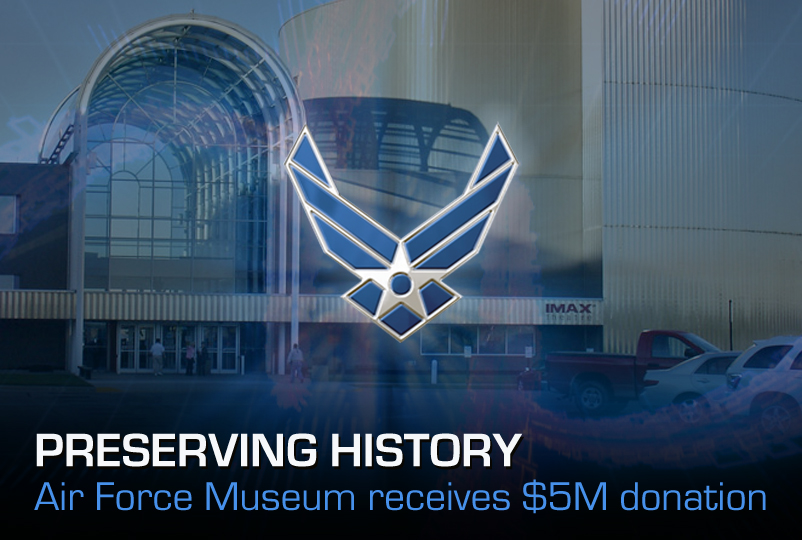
Preserving History